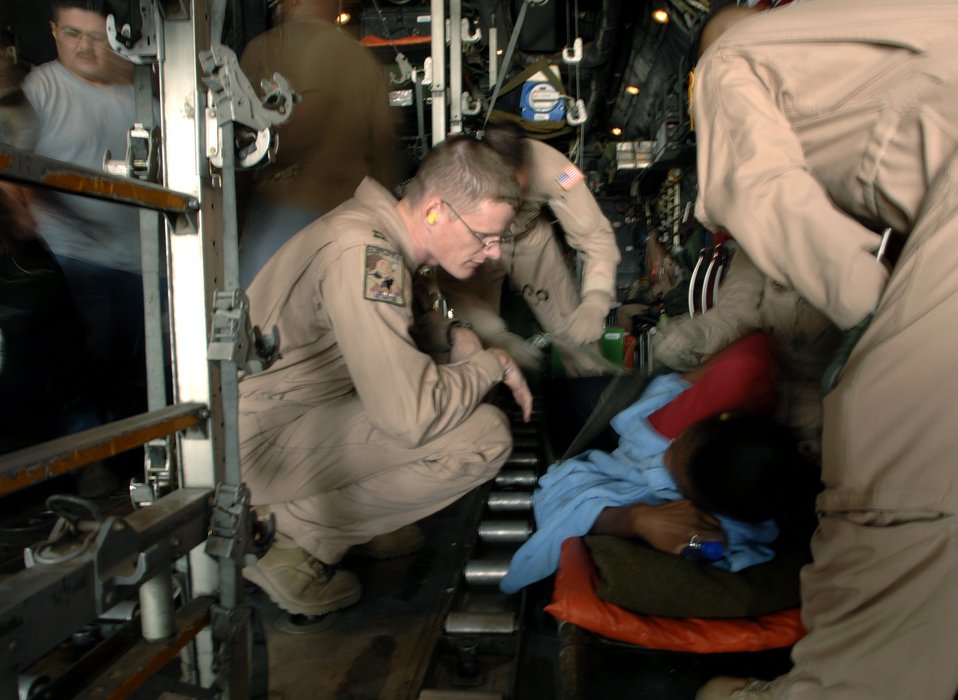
Aeromedical evacuation mission

During an aeromedical evacuation stop in Bahrain, flight nurse Capt. Nathan Ferguson checks on the comfort of a patient before the C-130 Hercules taxis for takeoff. By days end, 13 patients were picked up at five different locations and transported to waiting medical facilities through out the U.S. Central Command area of responsibility. Captain Ferguson is the 379th Expeditionary Aeromedical Evacuation Squadron and is deployed from the 43rd Aeromedical Evacuation Squadron at Pope Air Force Base, N.C.